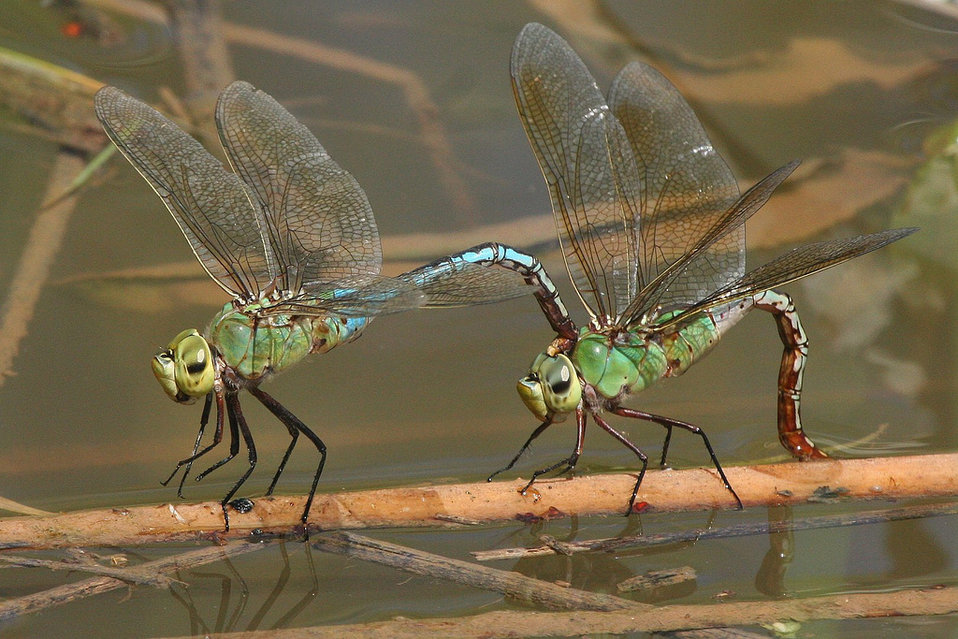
Green darner dragonflies at Bosque del Apache National Wildlife Refuge.